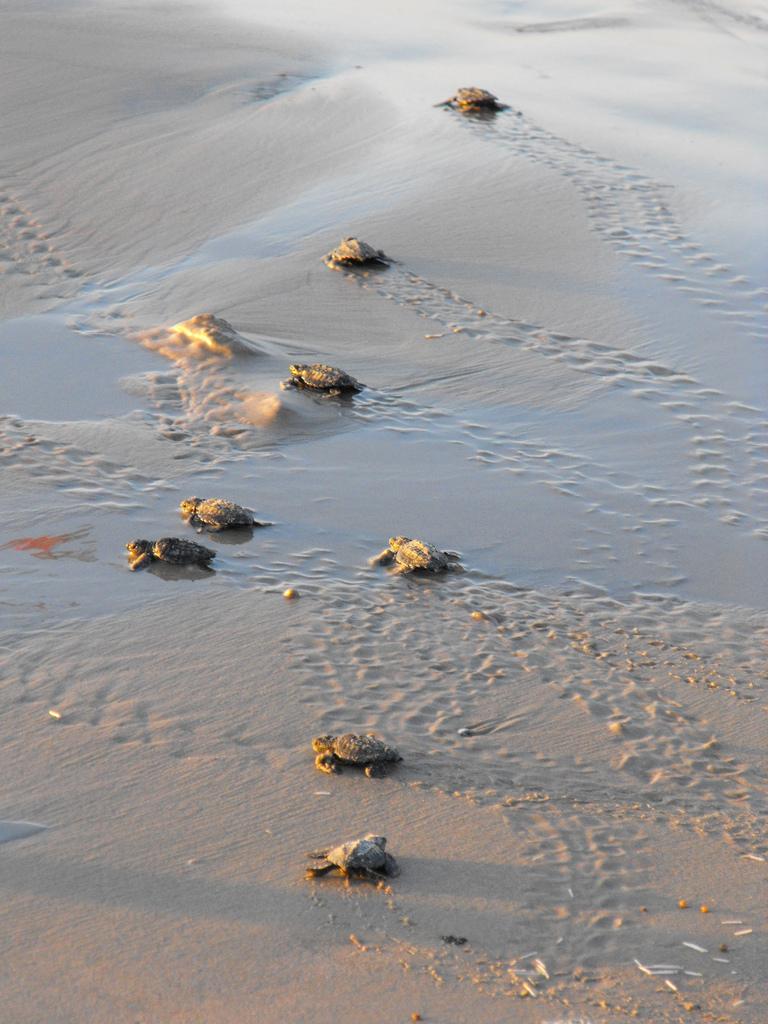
Photo of The Week: Baby Sea Turtles on a Beach

From the Flickr collection of the USFWS Southwest Region.